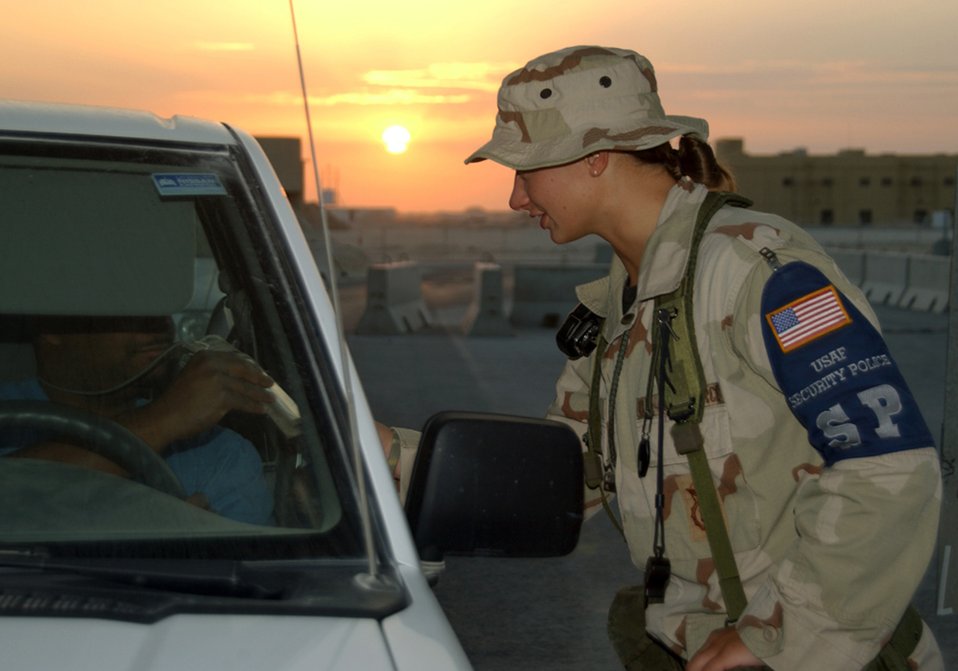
Security

SOUTHWEST ASIA (AFPN) -- Airman 1st Class Christina Luksa ensures base security at the flightline. Airman Luksa is in the 379th Expeditionary Security Forces Squadron.